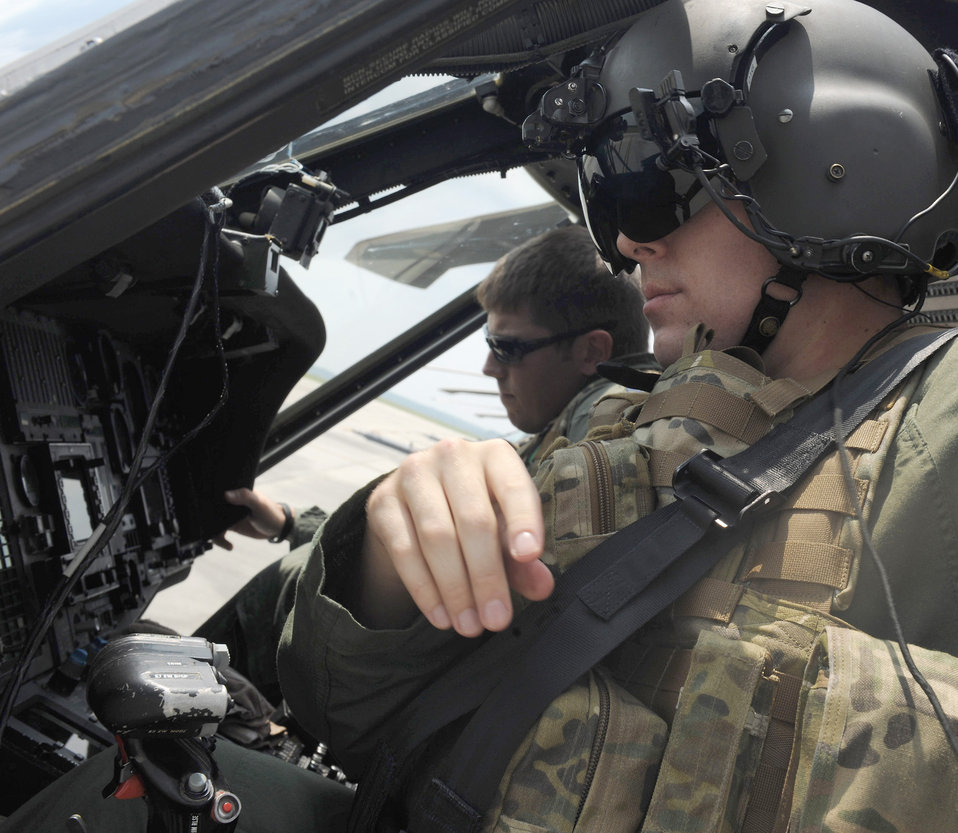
HH-60G munitions training

Capt. Kyle Waite waits in the cockpit Aug. 25, 2010, at Moody Air Force Base, Ga., before a training mission. The captain and his crew flew to several different landing zones and also practiced artillery fire during their flight. Captain Waite is an HH-60G pilot with the 41st Rescue Squadron.